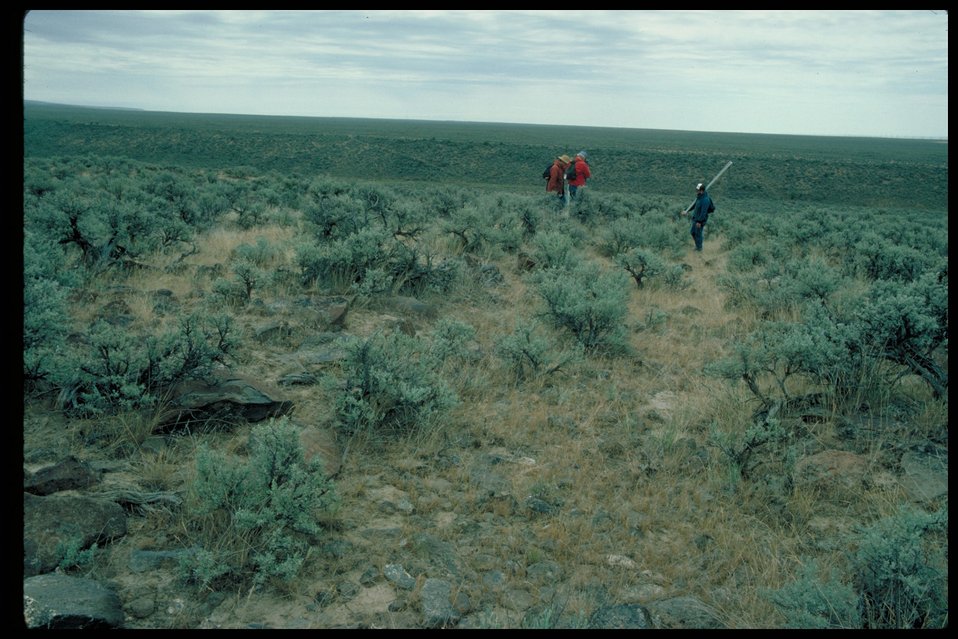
Oregon Trail west of Alkali Creek Lower Snake River District